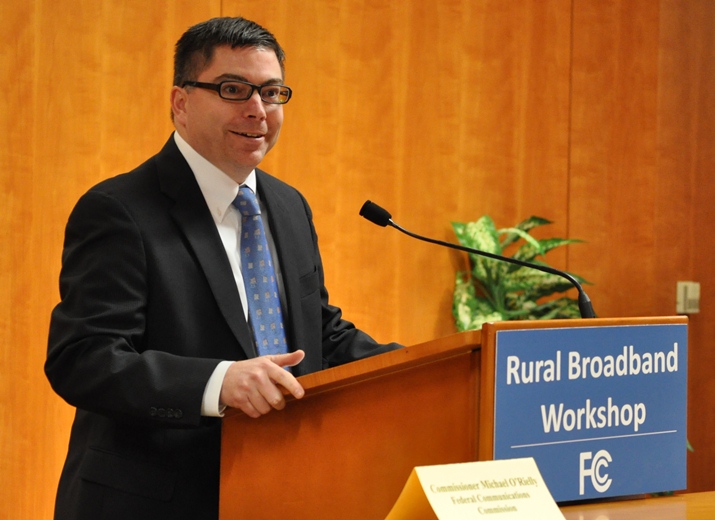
Rural Broadband Workshop: March 19, 2014

Introductory Remarks for Panel 2 from FCC Commissioner Michael O’Rielly